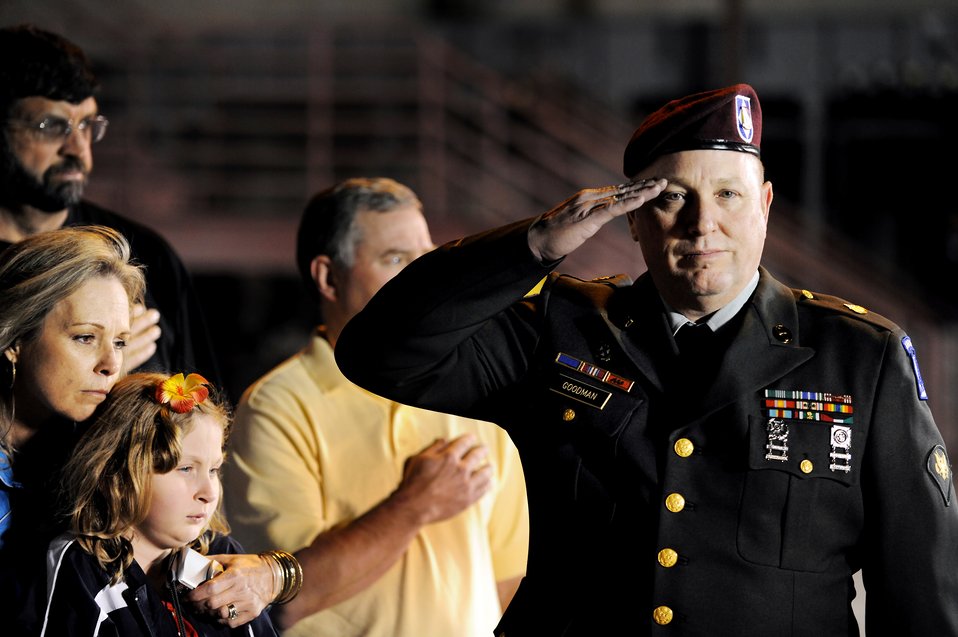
Air Force pilot missing in action from Vietnam War is identified

Former U. S. Army Specialist Russell Goodman, along with other members of the Goodman family, salutes as an honor guard from Nellis Air Force Base, Nev., provides a dignified transfer Jan. 12, 2010, for the remains of his father, Maj. Russell C. Goodman from an aircraft to a hearse at McCarran International Airport in Las Vegas. Major Goodman was killed in action in Vietnam on Feb. 20, 1967, when his F-4 Phantom was shot down.